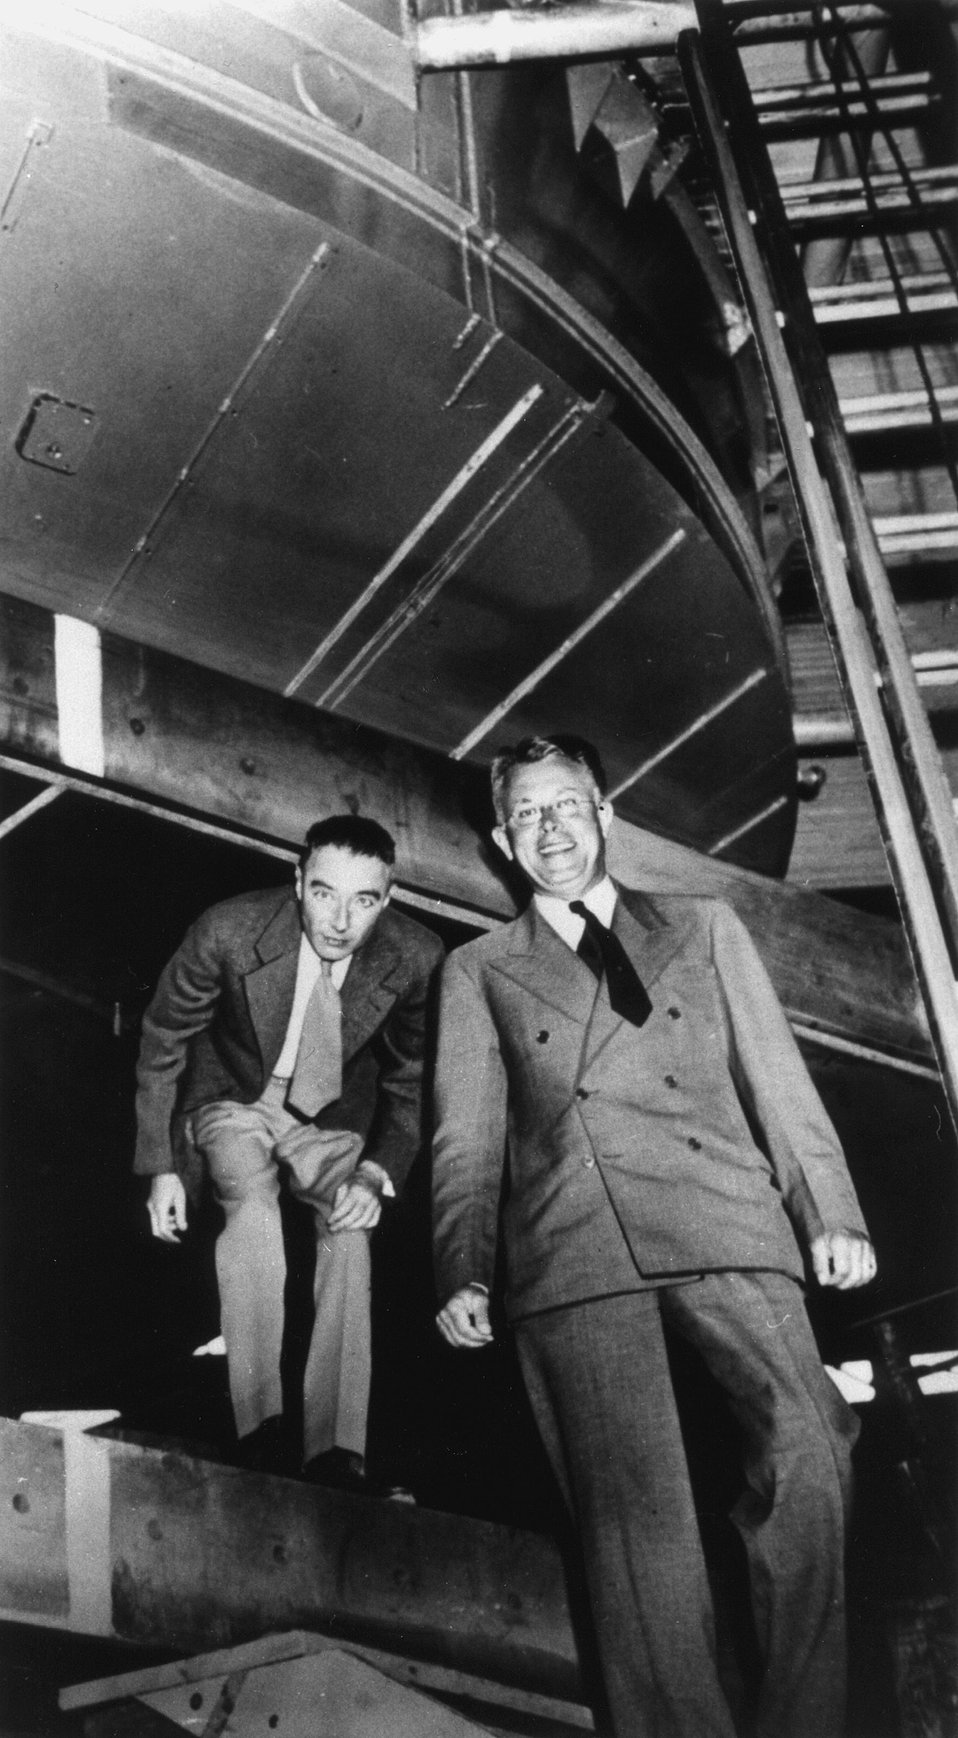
Oppenheimer & Lawrence at the 184' cyclotron. c. 1946